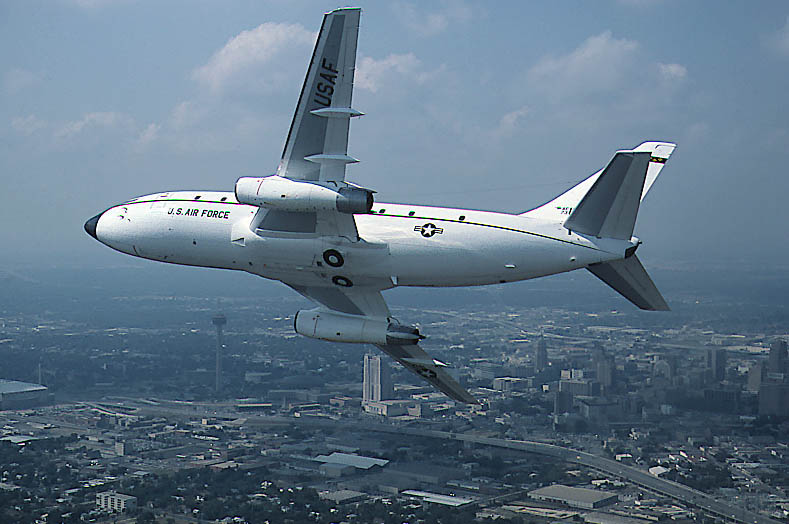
T-43 trainer

FILE PHOTO -- The T-43A is a medium-range, swept-wing jet aircraft equipped with modern navigation and communications equipment to train navigators for strategic and tactical aircraft. The T-43A is primarily used in the Air Force's undergraduate navigator training program. Several T-43s are configured for passengers and provide operational support to assigned commands and the Air National Guard.
The T-43A is the Air Force version of the Boeing 737 transport. One jet engine is mounted under each wing. The exterior differences between the military and commercial aircraft include the addition of many small blade-type antennas, sextant ports, a wire antenna for high-frequency radio and fewer windows.